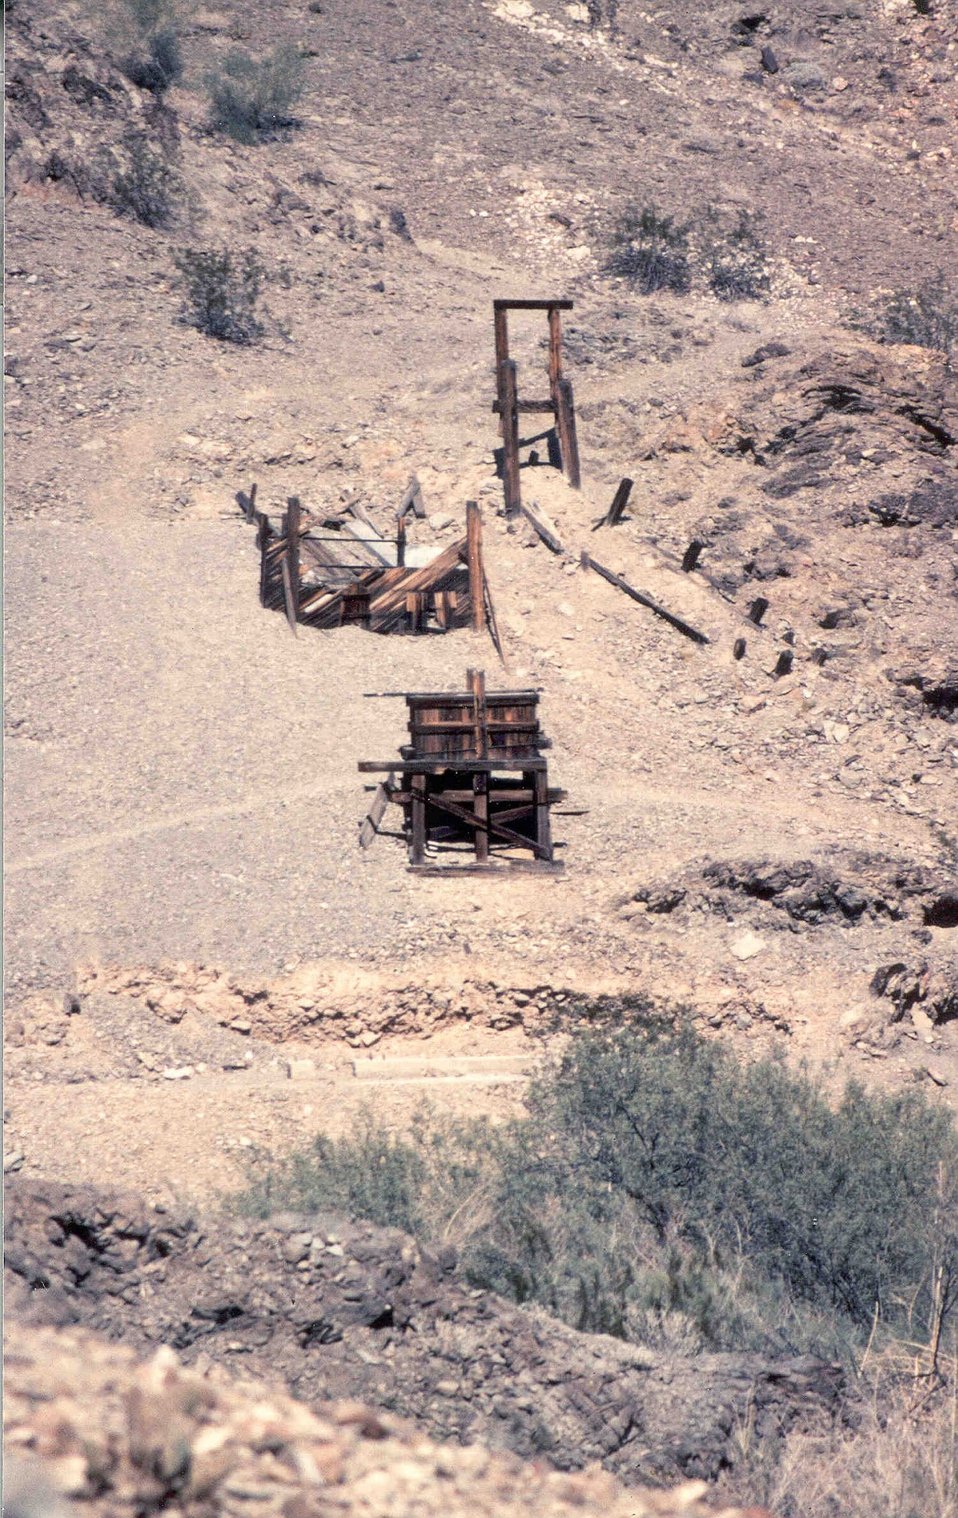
An old abandoned mine in Quartzsite, AZ